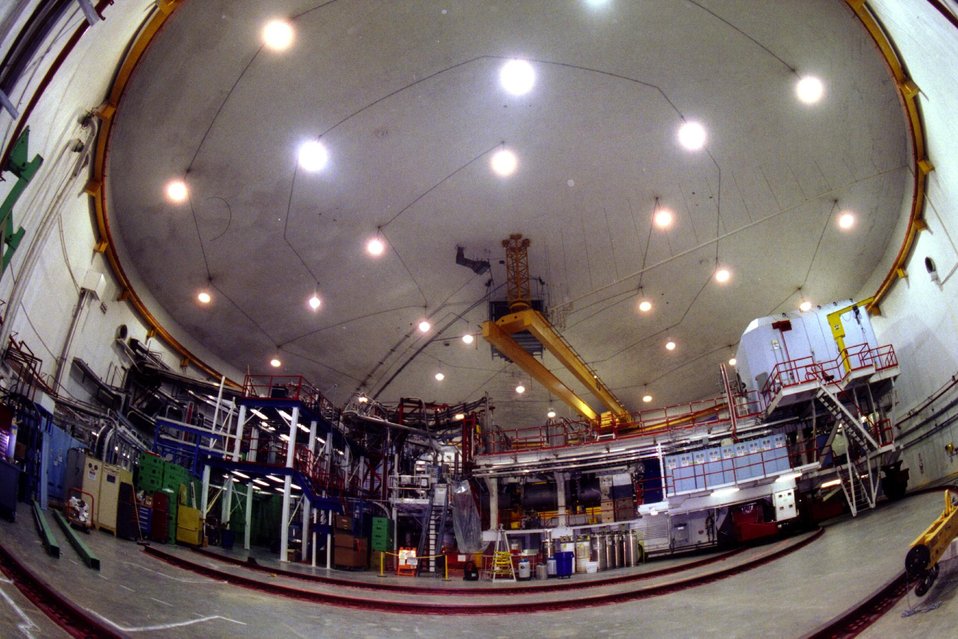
WIDE ANGLE VIEW OF HALL C AT THE THOMAS JEFFERSON NATIONAL ACCELERATOR FACILITY.

THE JEFFERSON LAB IS BUILT FOR NUCLEAR PHYSICS RESEARCH. SCIENTISTS USE SUPERCONDUCTING ELECTRON ACCELERATING TECHNOLOGY AT THE LAB'S CONTINUOUS ELECTRON BEAM ACCELERATOR (CEBAF) TO CONDUCT EXPERIMENTS. HIGH ENERGY ELECTRON BEAMS FROM THE ACCELERATOR ALLOWS SCIENTISTS TO PROBE THE ATOM'S NUCLEUS, REVEALING HOW QUARKS MAKE UP PROTONS, NEUTRONS, AND THE NUCLEUS ITSELF.